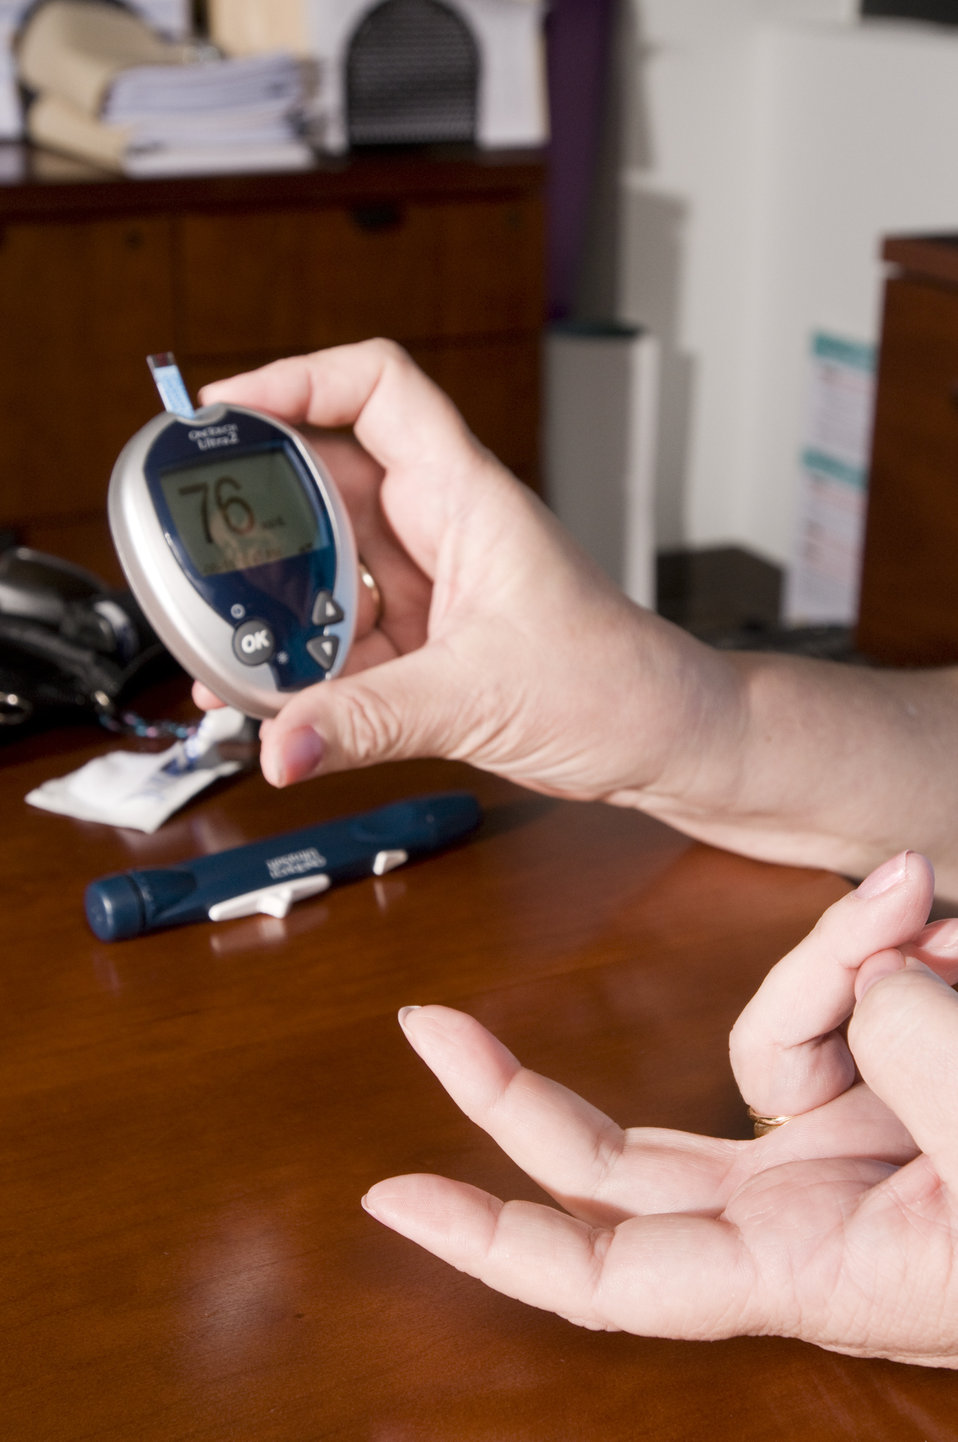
The woman pictured here, was checking her blood glucose level. This process is known as self-monitoring blood glucose, and its a way for people with diabetes to find out how much glucose is in their blood. A drop of blood from the fingertip is placed on a special coated strip of paper that 'reads' the amount of glucose in the blood. Many people use an electronic meter to get this reading. This stage of the procedure now required this patient to read her blood glucose level using an electronic glucose meter, which draws the blood up and into the device. Her reading of 76 mg/dL, was within normal limits, which when take before eating should read 70-130 mg/dl (5.0-7.2 mmol/l), and after eating should read